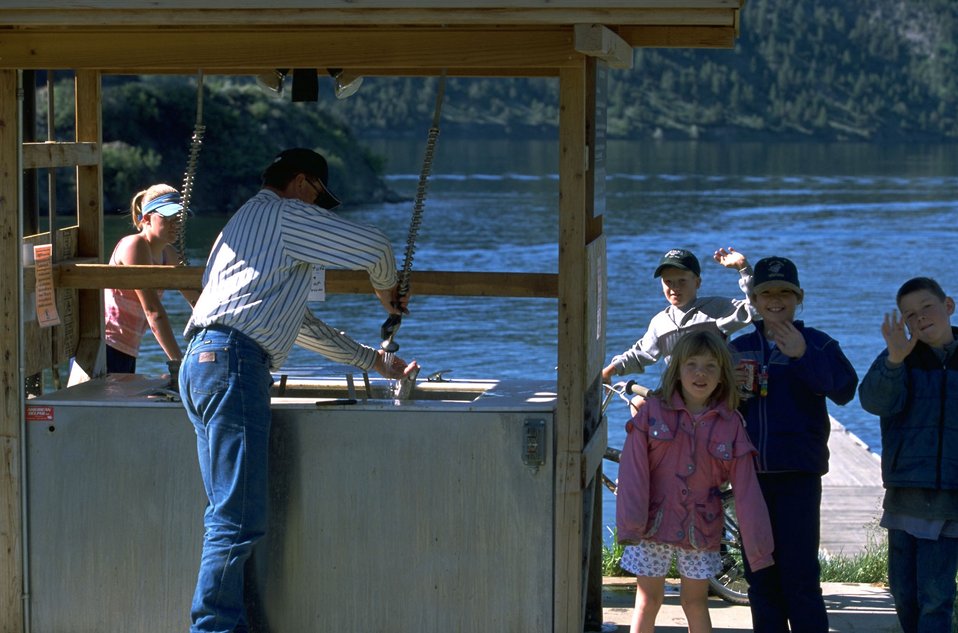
Kids gathered at the Fish Cleaning Station at Log Gulch Campground